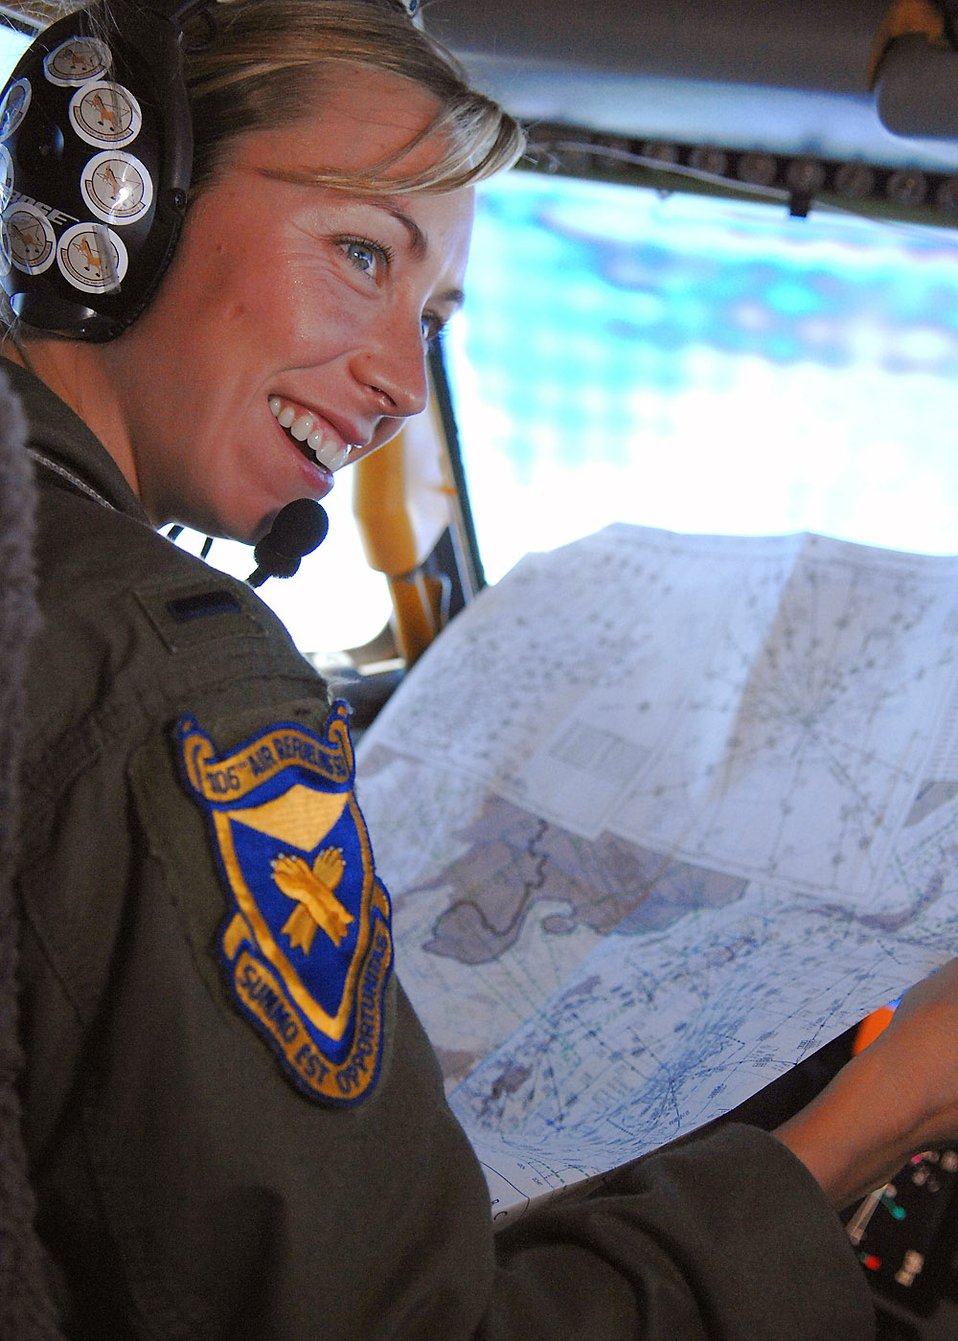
Women pilots: A weapon to be used

1st Lt. Lauren Diskell reads an aerial map while flying her KC-135 Stratotanker during a practice aerial refueling mission March 19 near the Mariana Islands. KC-135s refuel the B-52 Stratofortressess that support the U.S. continuous bomber presence in the Pacific region. Lieutenant Diskell is deployed from the 106th Air Refueling Squadron of the Alabama Air National Guard.